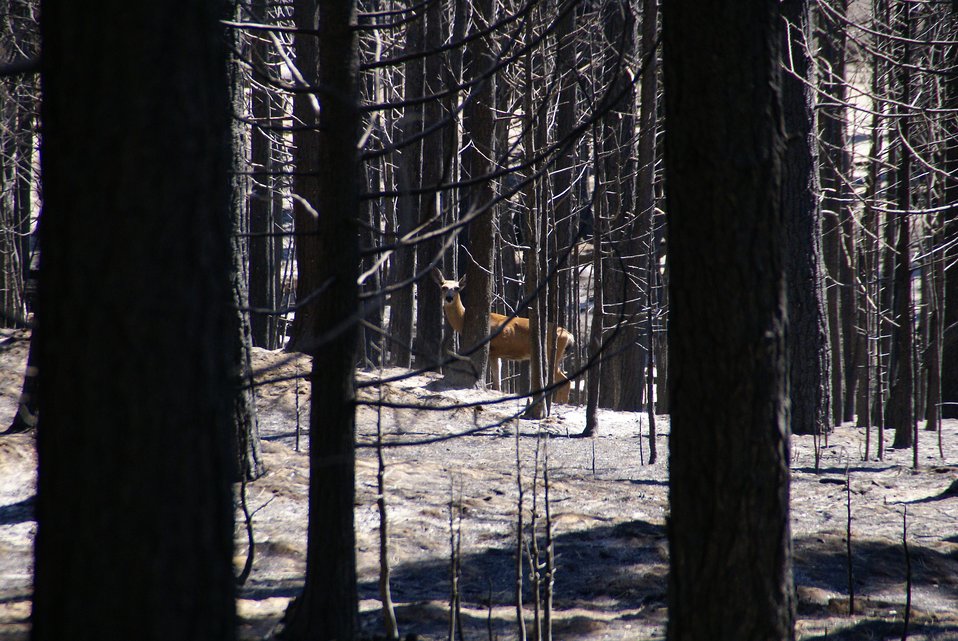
A doe deer returns to its’ home range along the Cherry Lake Road at the Rim Fire. The Rim Fire in the Stanislaus National Forest near in California began on Aug. 17, 2013 and is under investigation. The fire has consumed approximately 256,169 acres and is 84% contained.